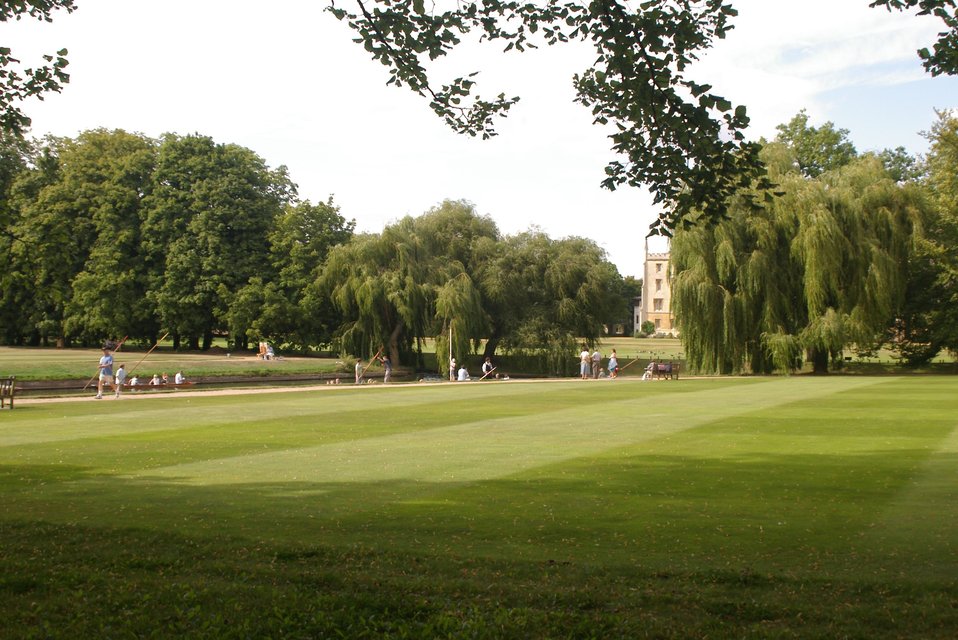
English:
Image title: Beautiful nice grass Image from Public domain images website, http://www.public-domain-image.com/full-image/nature-landscapes-public-domain-images-pictures/grass-public-domain-images-pictures/beautiful-nice-grass.jpg.html